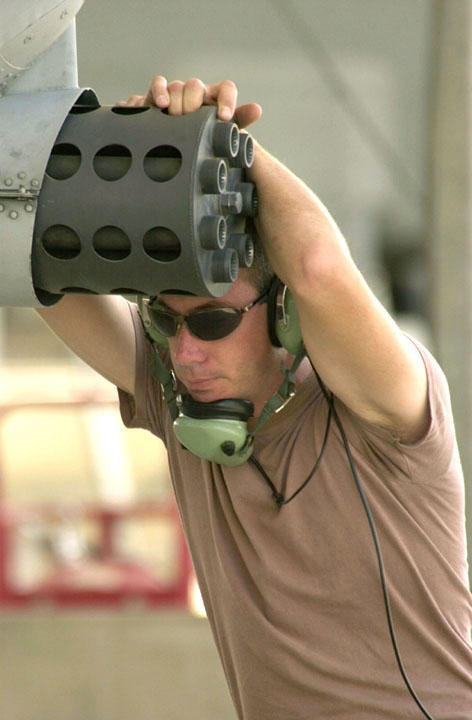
Crew rest

1990's -- OPERATION ENDURING FREEDOM (AFPN) -- Steven, an A-10 Thunderbolt II crew chief here, takes a break on a Gatling gun. He is from the Maryland Air National Guard deployed here to help fly the second leg of a 90-day A-10 commitment.